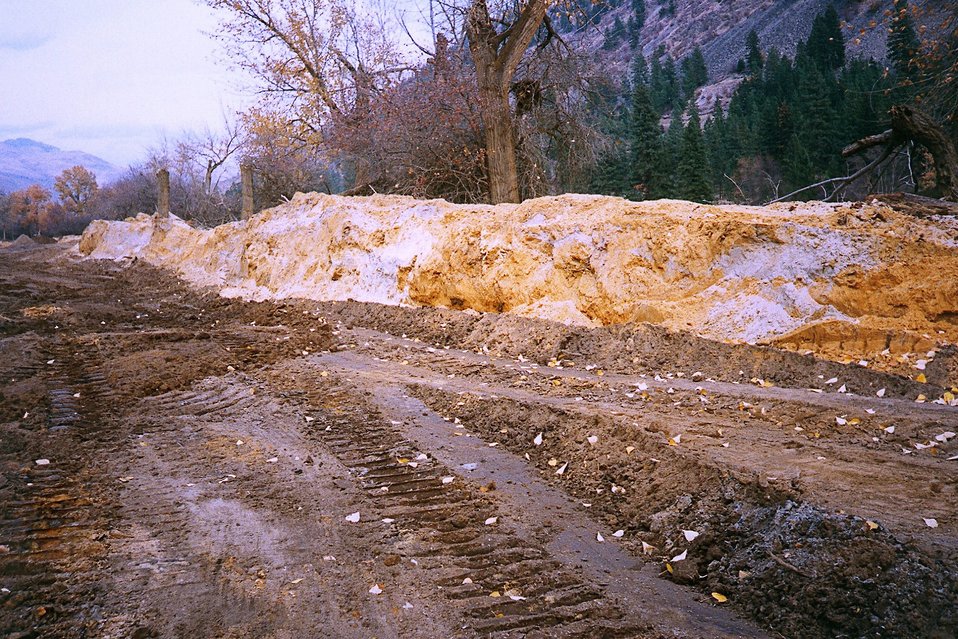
AML. Kaaba-Texas Mine, middle of tails output.